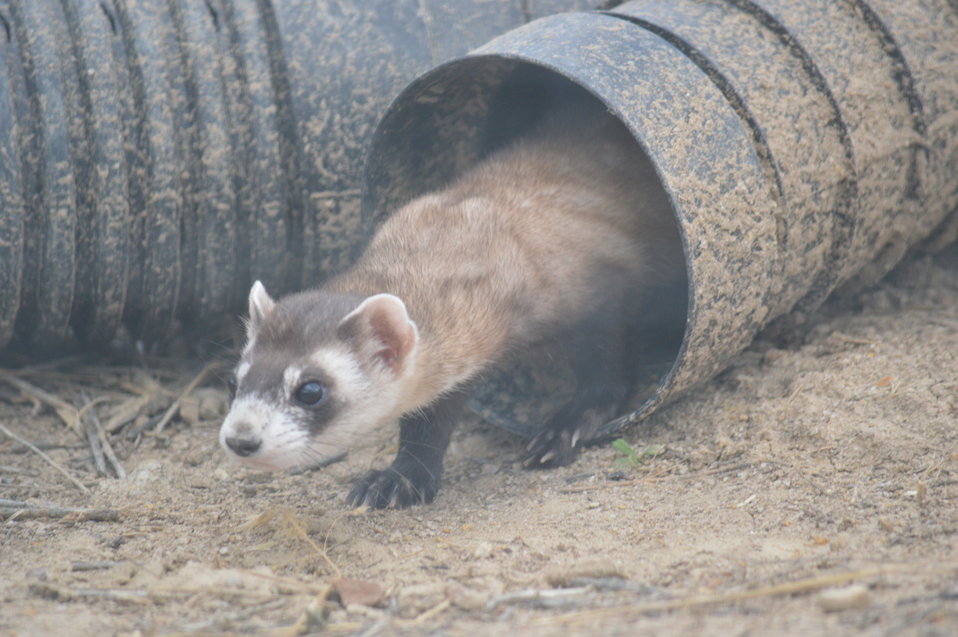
Interns visit the NBFFCC

In the summer of 2012, USFWS Region 6 interns visited the National Black-footed Ferret Conservation Center (NBFFCC) in Colorado to learn how the program reintroduces the endangered Black-footed ferret back into its native habitat.